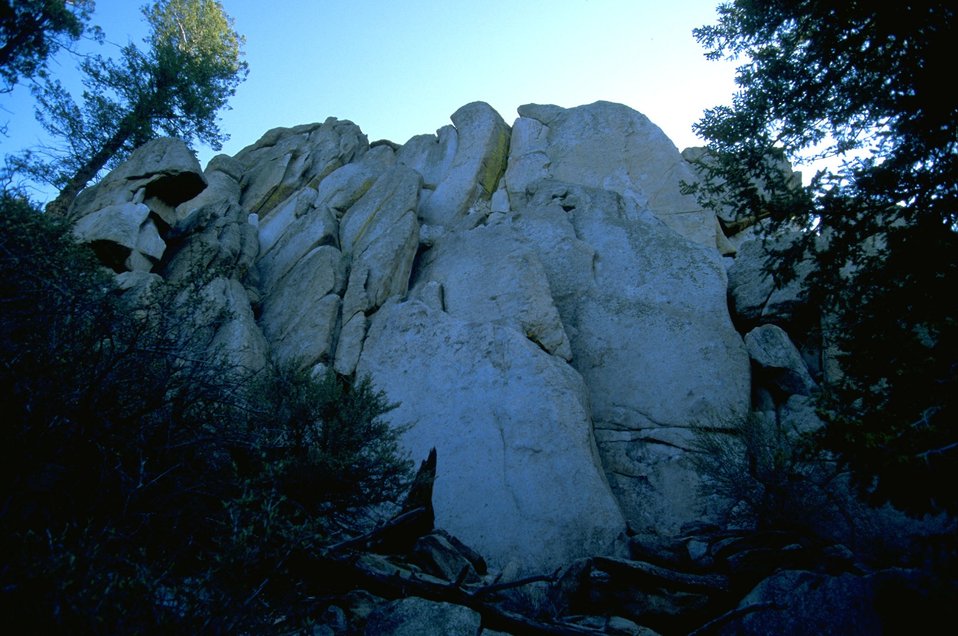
Closeup of rock formations